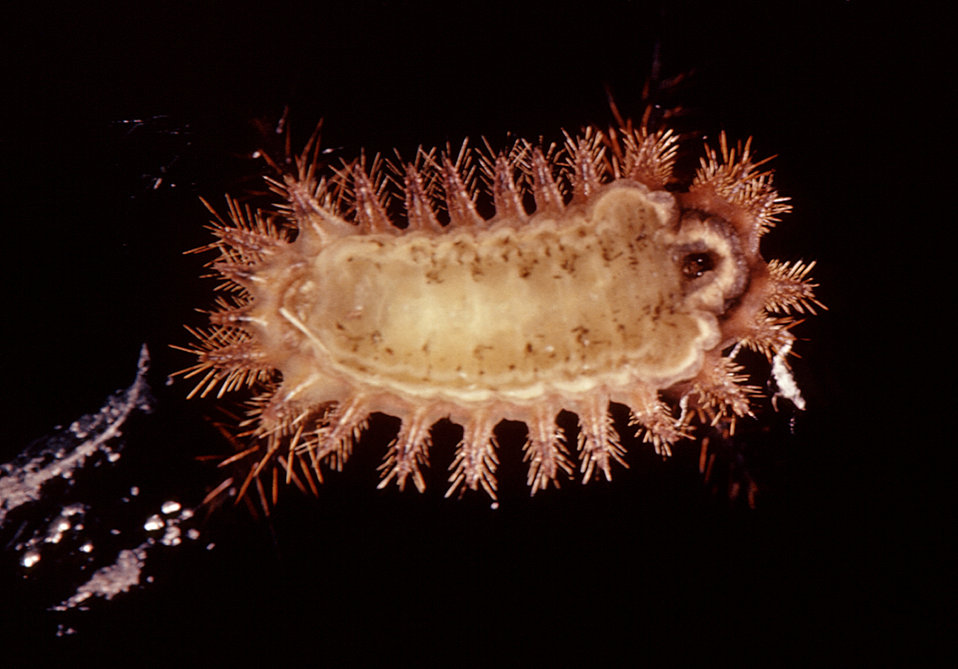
This is an inferior view of a saddleback caterpillar, Sibine stimulae, an urticating, or hive-producing caterpillar.